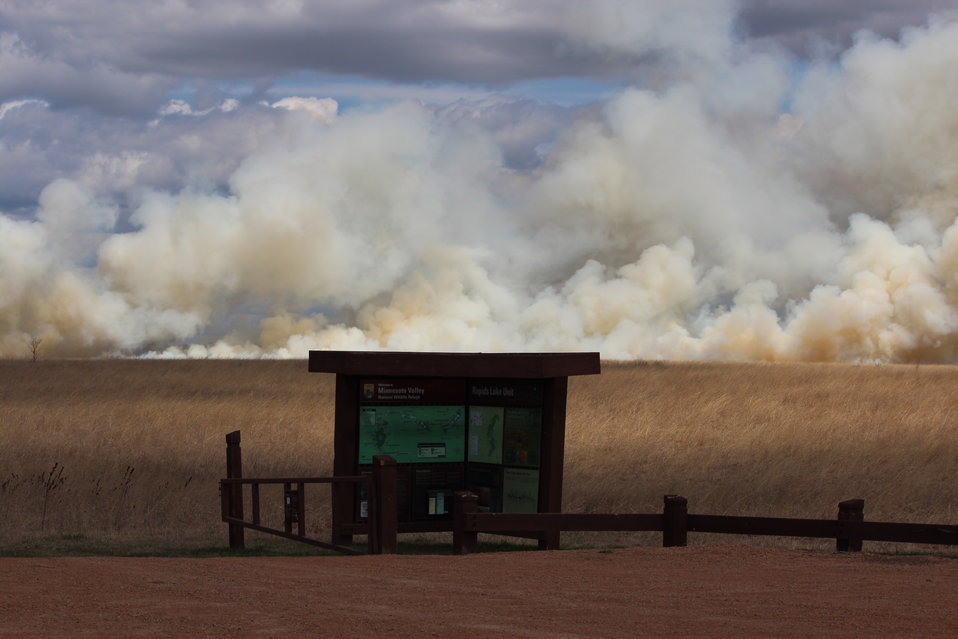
Smoke from a prescribed fire at Minnesota Valley National Wildlife Refuge's Rapids Lake Unit